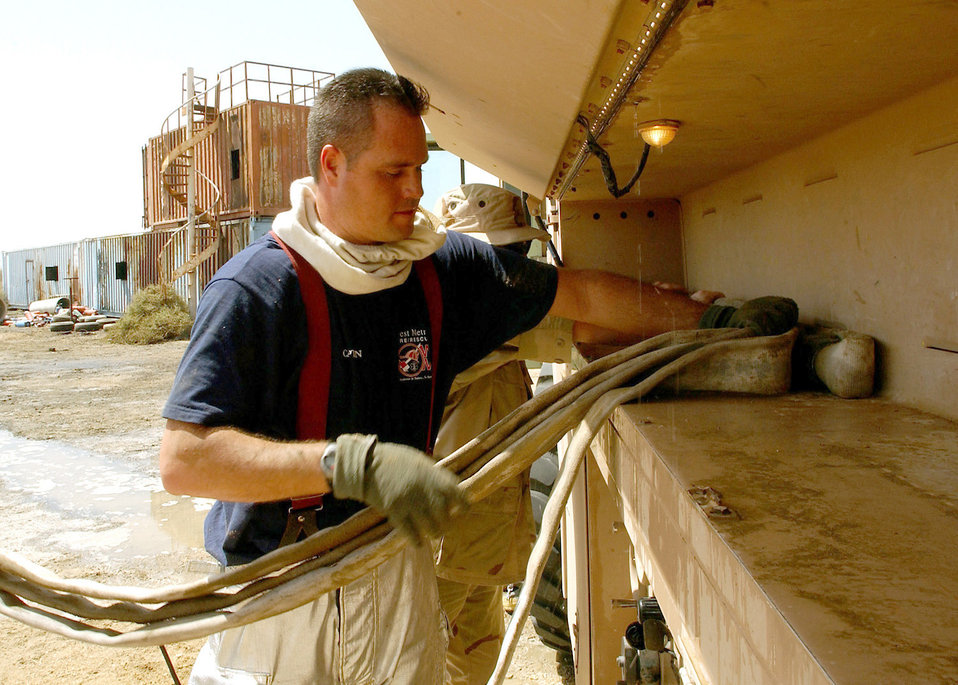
Rescue exercise

OPERATION ENDURING FREEDOM -- Staff Sgt. James Golia, a fire protection crew chief from the 320th Expeditionary Civil Engineer Squadron, rolls up a fire hose after a rescue exercise with host-nation firefighters. The 320th ECES fire protection team and host-nation teams trained together to better prepare for a real fire emergency at a forward-deployed location.